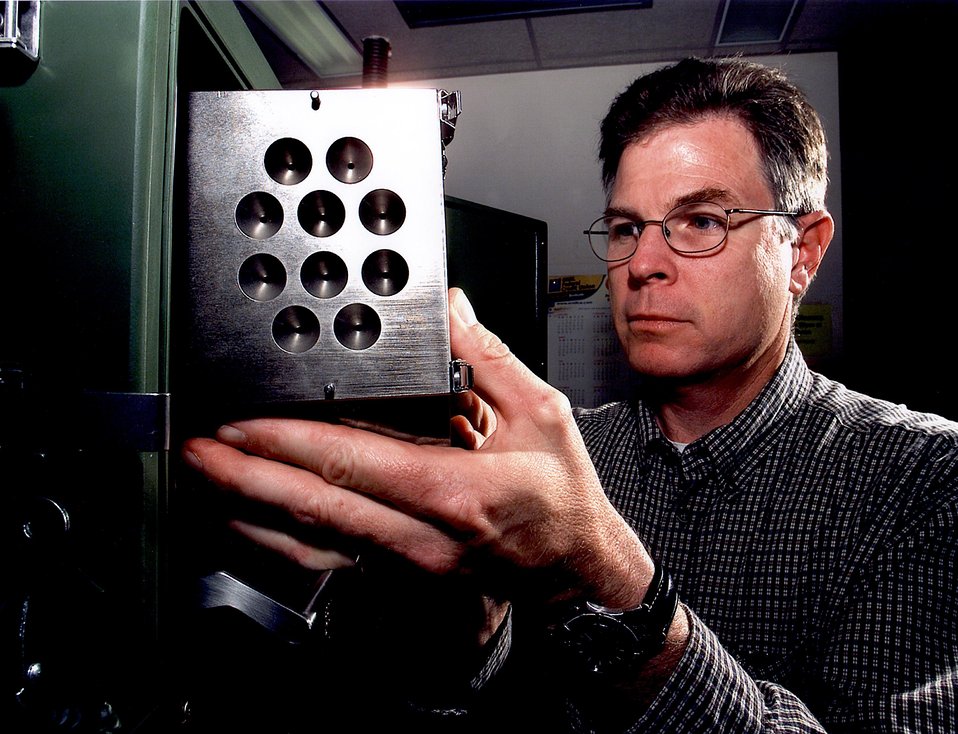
BLOCK II CHEMICAL BIOLOGICAL MASS SPECTROMETER.

THE BLOCK II CHEMICAL BIOLOGICAL MASS SPECTROMETER IS THE FIRST INTEGRATED INSTRUMENT CAPABLE OF DETECTING AND IDENTIFYING BOTH CHEMICAL WARFARE AGENTS AND BIOLOGICAL WARFARE AGENTS. THIS TECHNOLOGY RECEIVED AN R&D 100 AWARD FOR 2001 AND COULD PLAY A ROLE IN SAFEGUARDING THE MILITARY, AIRPORTS, AND STADIUMS.